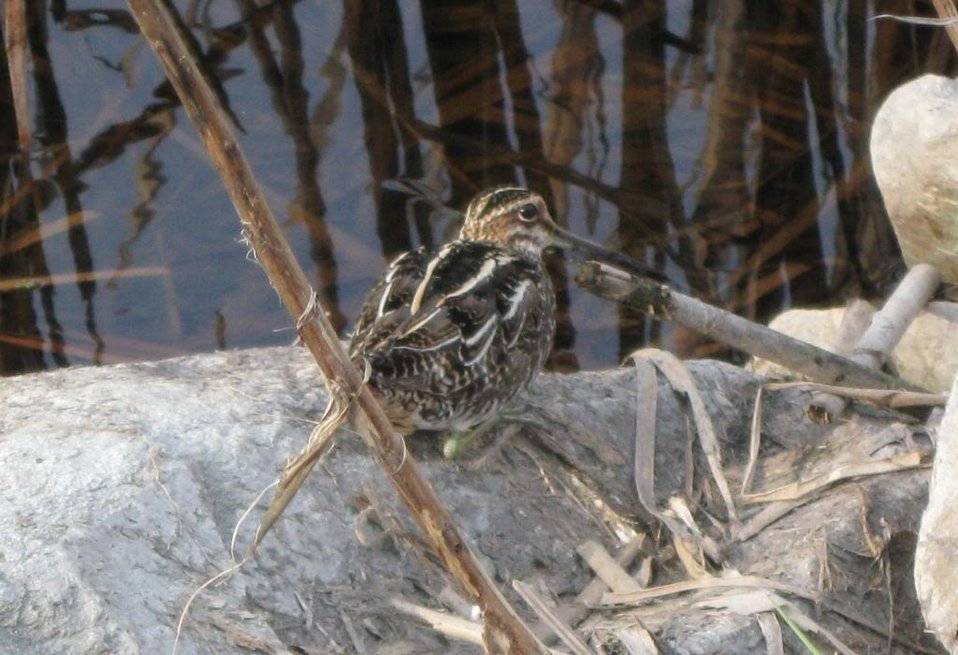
Common snipe at Eastern Massachusetts National Wildlife Refuge Complex